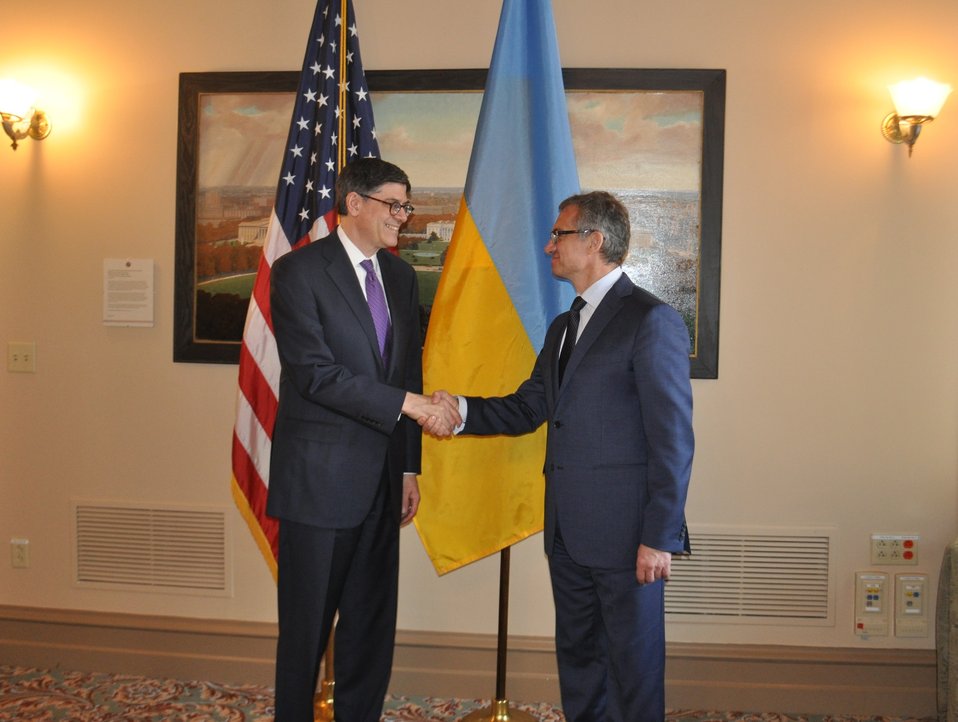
Secretary Lew and Ukrainian Finance Minister Oleksandr Shlapak meet at Treasury

April 14, 2014 - Secretary Lew and Ukrainian Finance Minister Oleksandr Shlapak met at Treasury and later participated in a signing ceremony for a $1 billion loan guarantee for the Government of Ukraine. This guarantee will complement the Government of Ukraine’s International Monetary Fund (IMF) reform program and underscores the United States’ commitment to Ukraine.